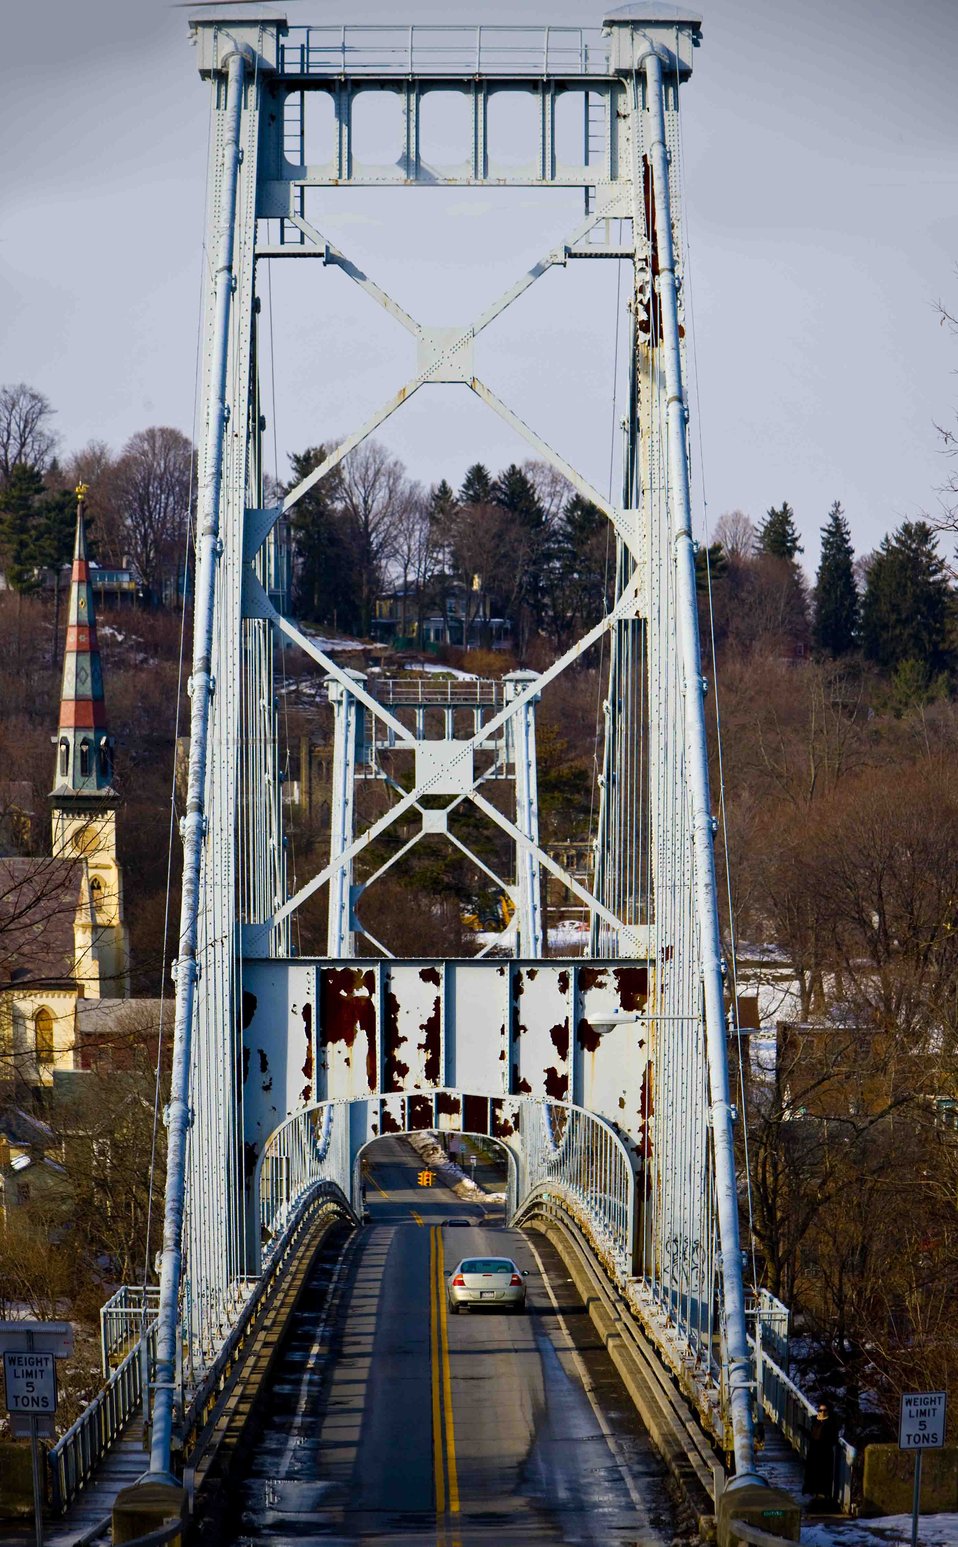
a photograph of the Wurts street Bridge from the Rondout in Kingston NY to Port Ewen NY Over the Rondout Creek, viewed from the Port Ewen approach. Completed in 1921 The bridge is limited to 5 tons and is expected to be renovated in 2009 by the state department of transportation